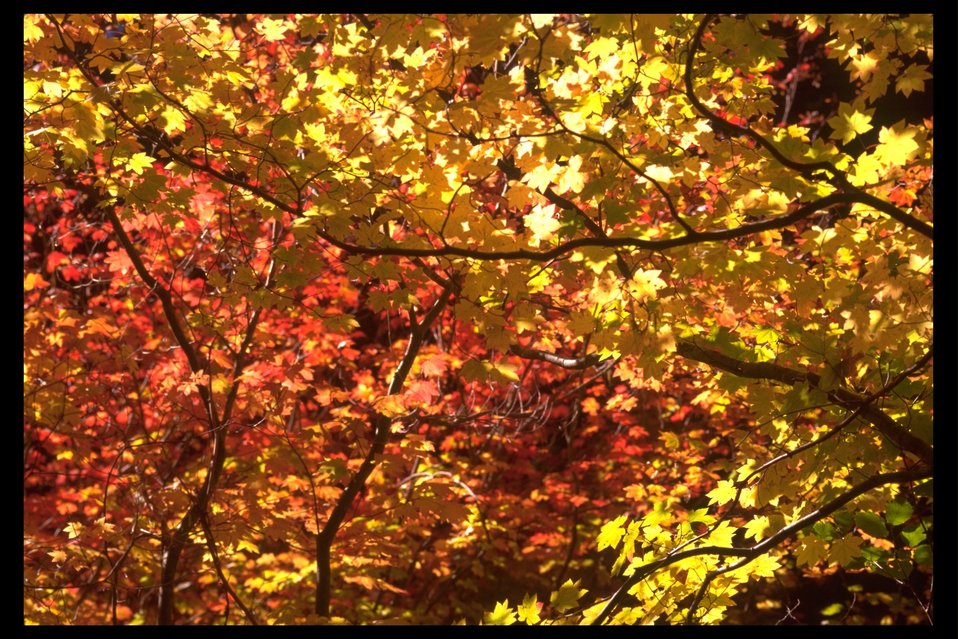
Big Leaf Maple in Round Mountain area.